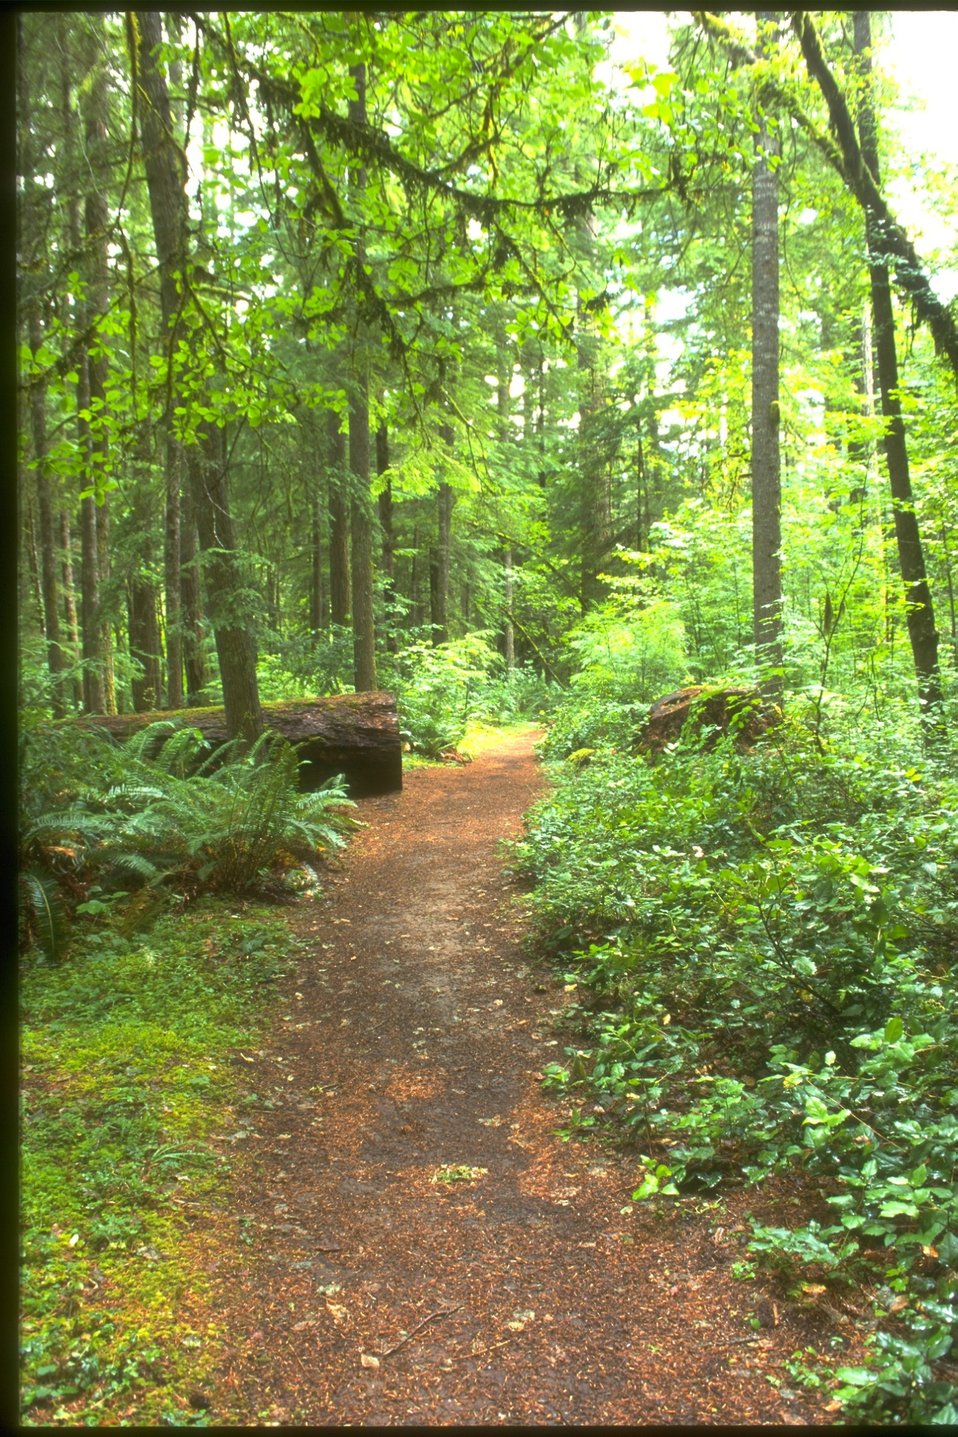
Susan Creek barrier-free trail for wheelchair accessability.